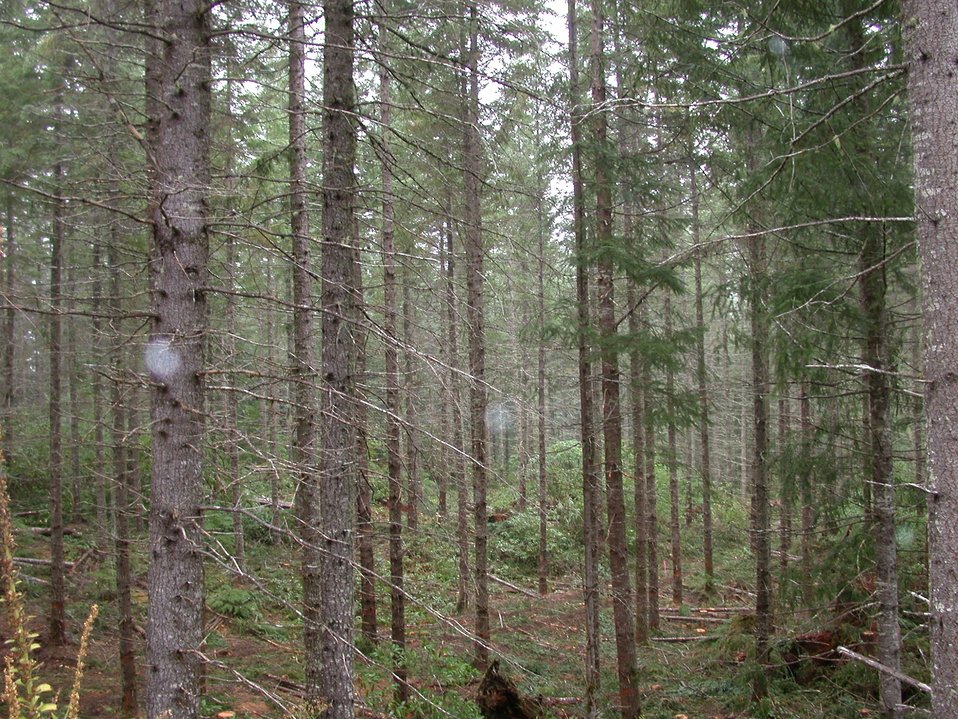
Camas East Timber Sale in Late Successional Reserve.